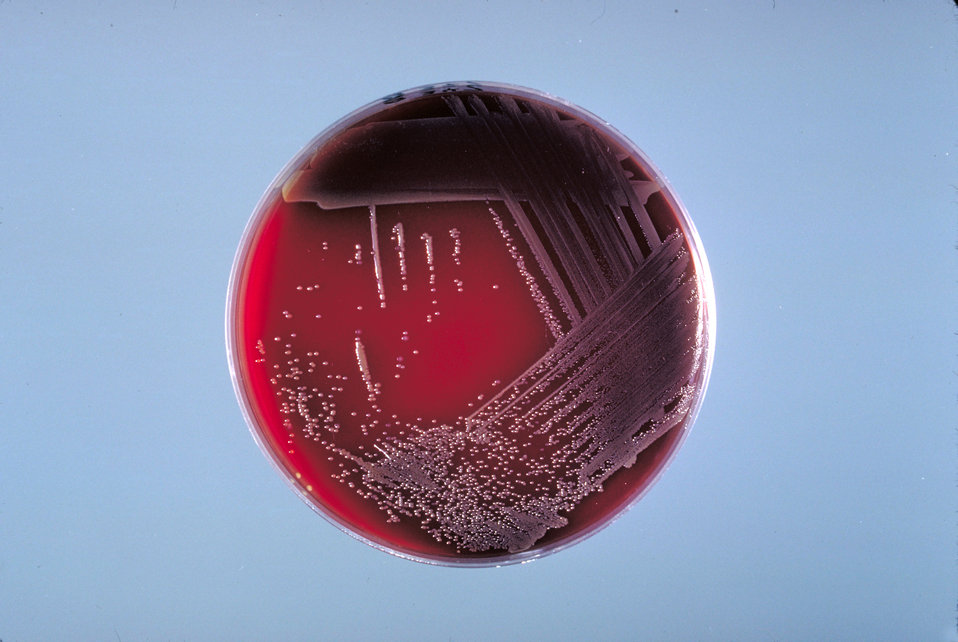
This is a sheep blood agar plate culture of Enterobacter sakazakii after 24 hours of growth at 36� C.